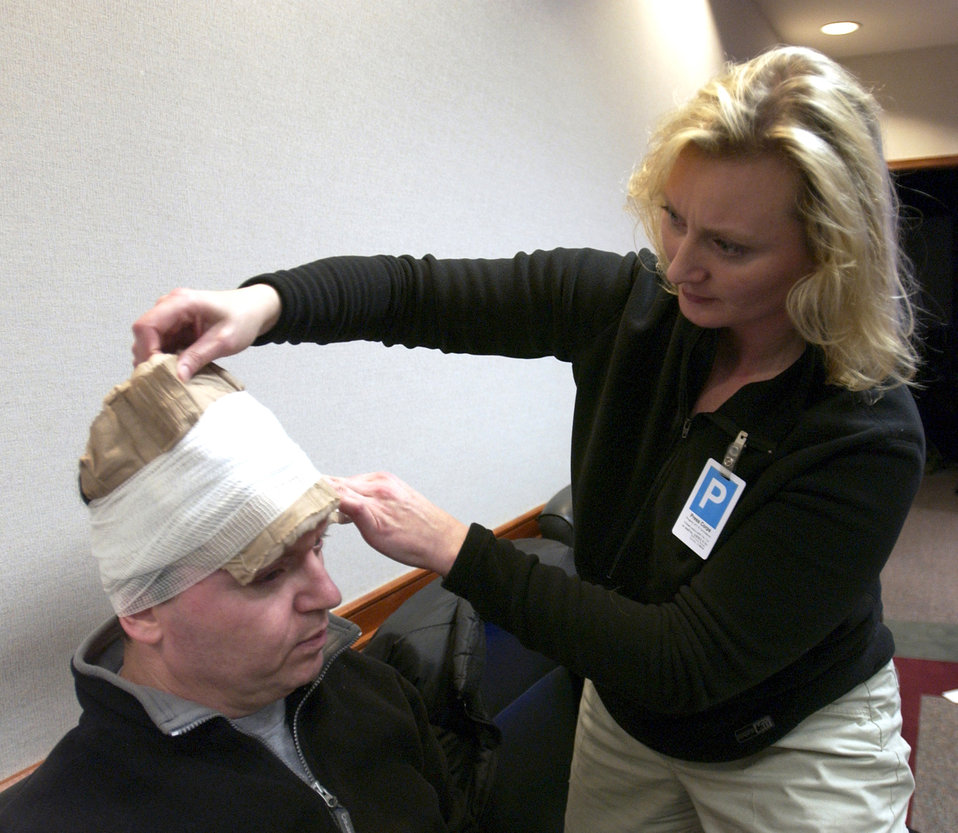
Center training civilian journalists

MCGUIRE AIR FORCE BASE, N.J. -- Gabor Horath (left) and Alex Quade practice first aid during Joint Military Media Contingency Training at McGuire Air Force Base, N.J. Horath is a Washington correspondent with Nepszabadsag in Hungary, and Quade is a CNN correspondent.